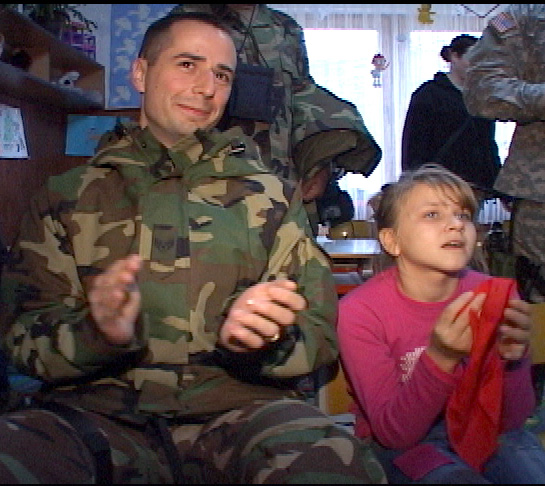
Servicemembers help children

PRISTINA, Serbia and Montenegro (AFPN) -- Staff Sgt. James Normandin enjoys a production by the children of the community center here. U.S. servicemembers deployed with the Kosovo Force at NATO Base Film City, Kosovo, raised more than $1,200 to buy fuel to keep the center's generator running. The generator provides heat and electricity to the center throughout the winter.